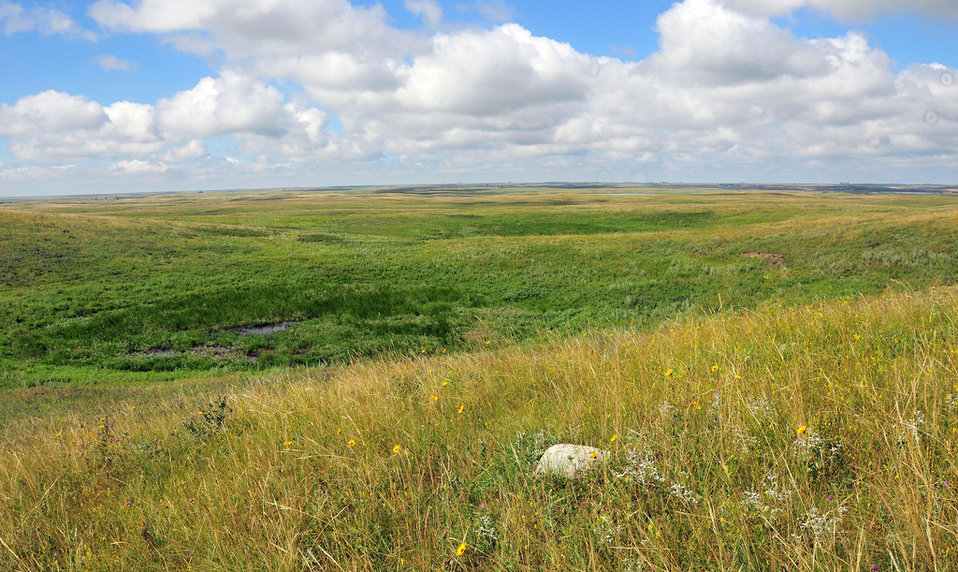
Prairie pothole

Photo credit: USFWS/Tom Koerner

Climate change is expected to stress the sensitive prairie pothole habitat with increasing temperatures and changing rainfall patterns, which will alter rates of evaporation, recharge, and runoff in these pond systems